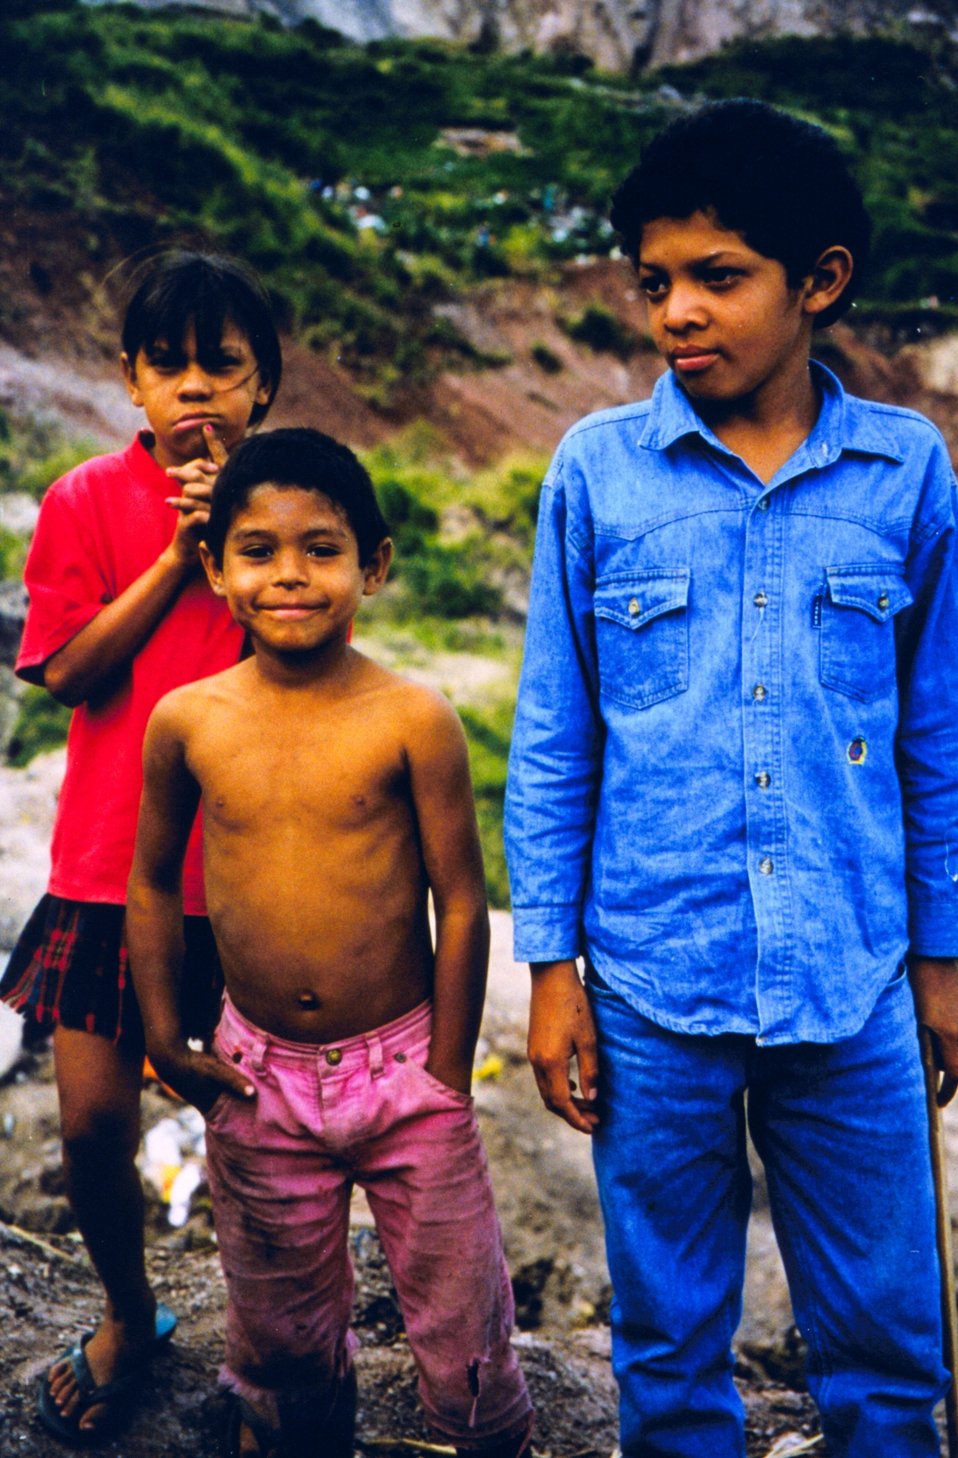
Life goes on in the aftermath of Hurricane Mitch. Over 9,000 deaths and 9,000 missing were attributed to Mitch making it the second most deadly hurricane in history ranking only below a 1780 hurricane in the Lesser Antilles.